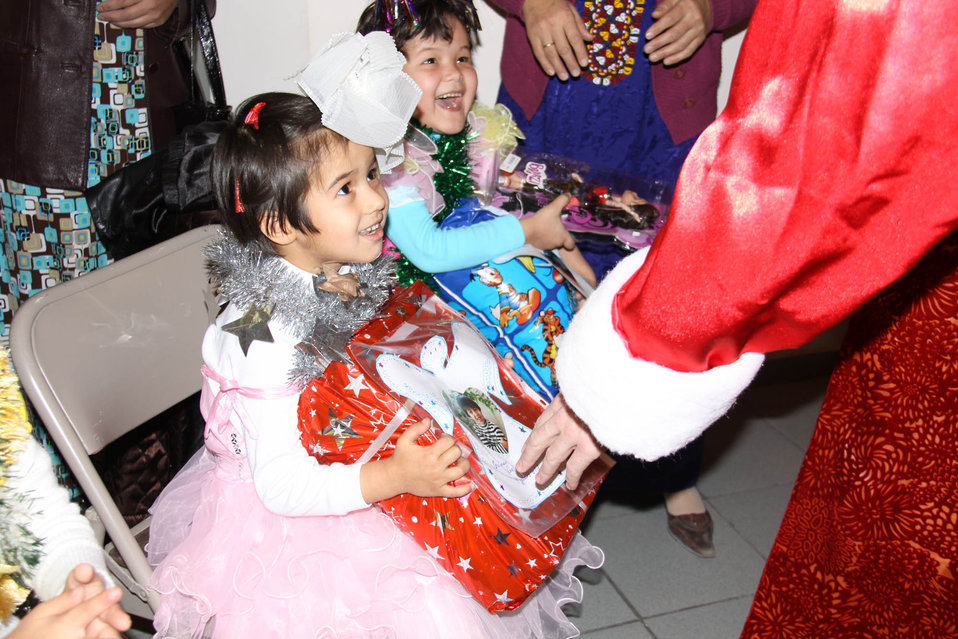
The Embassy Ashgabat Community Delivers Presents to Turkmen Youth

U.S. exchange alumni, together with the U.S. Embassy community and local NGOs brought the holiday spirit to over 90 orphans, disabled children, and disadvantaged youth at the U.S. Embassy Ashgabat in Turkmenistan in December 2010.